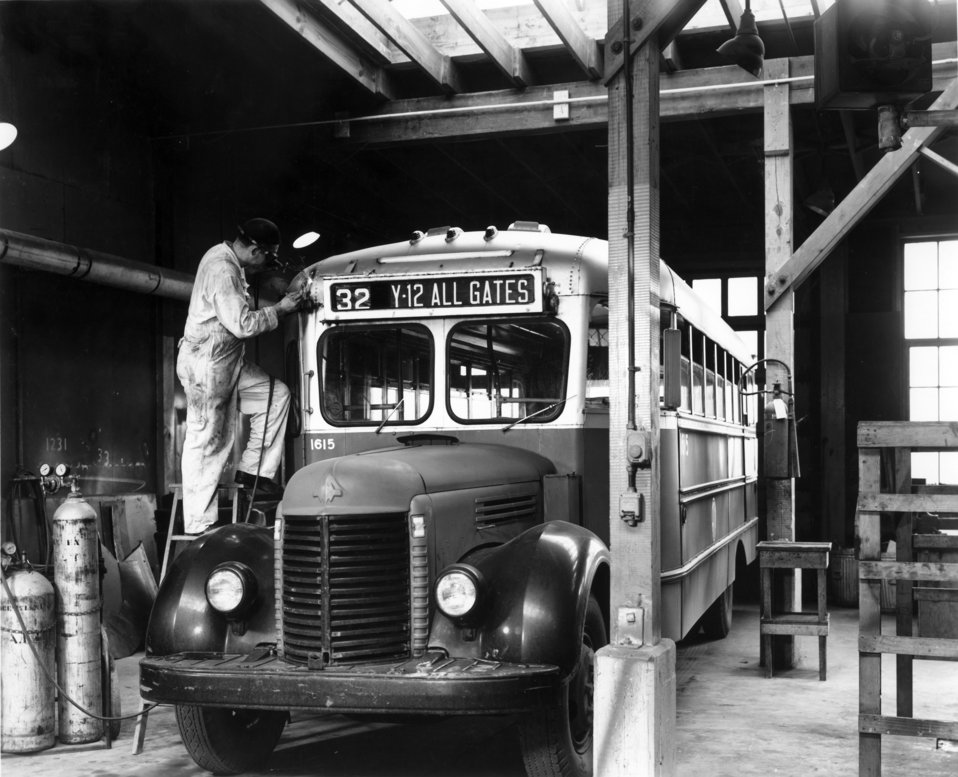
AIT bus line welding shop Oak Ridge

S-115 DOE Photo by Ed Westcott

AIT bus line welding shop Oak Ridge Tennessee 1945